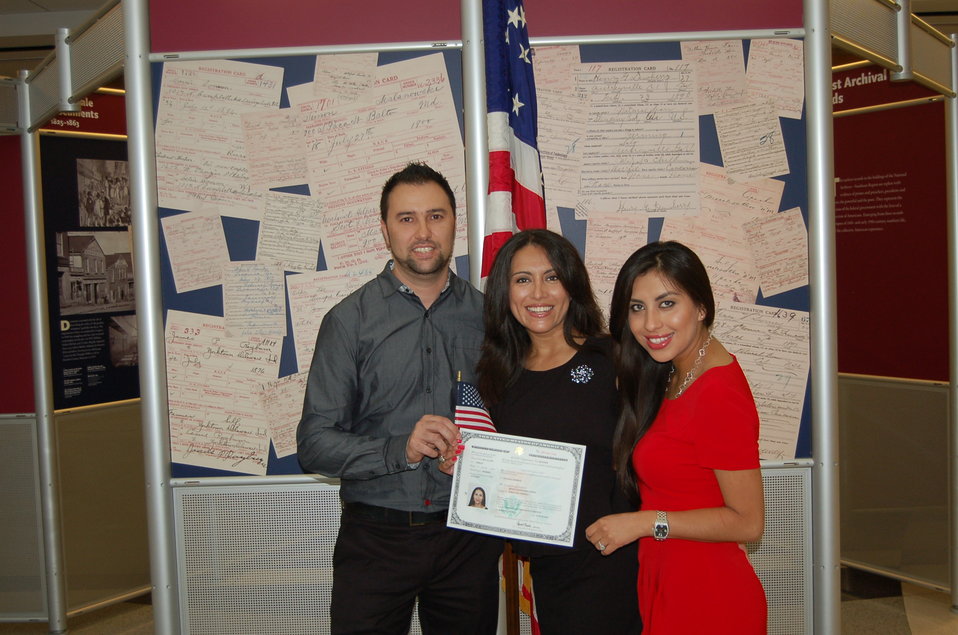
New Citizens